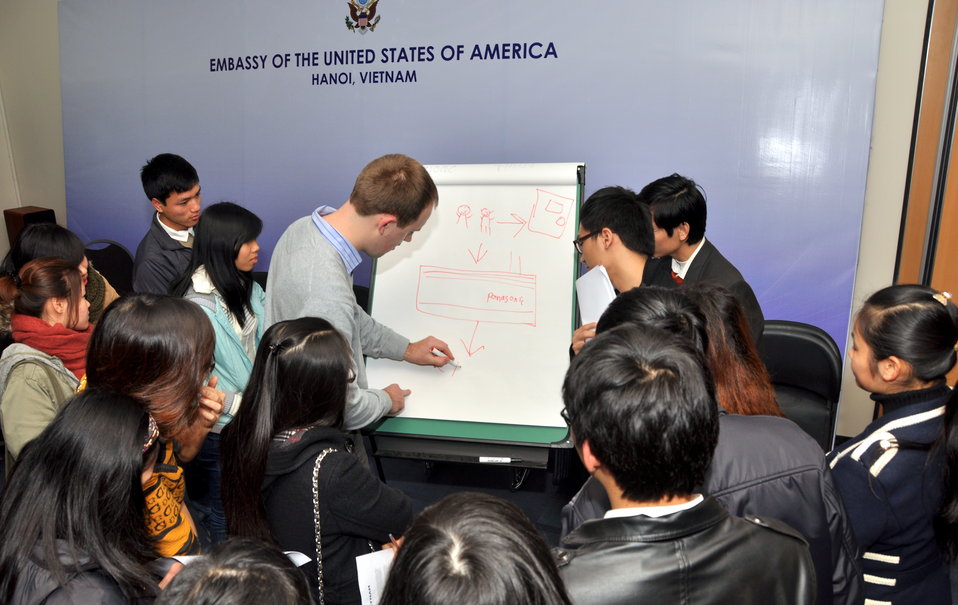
Speaker program on Climate Change and Clean Energy at the American Center

Hanoi, January 16, 2013